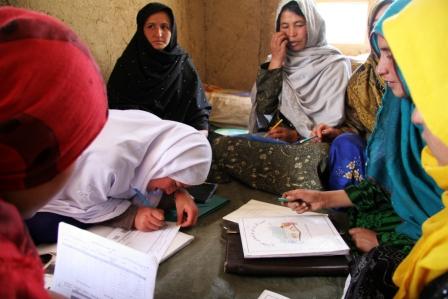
LCEP - Community Education